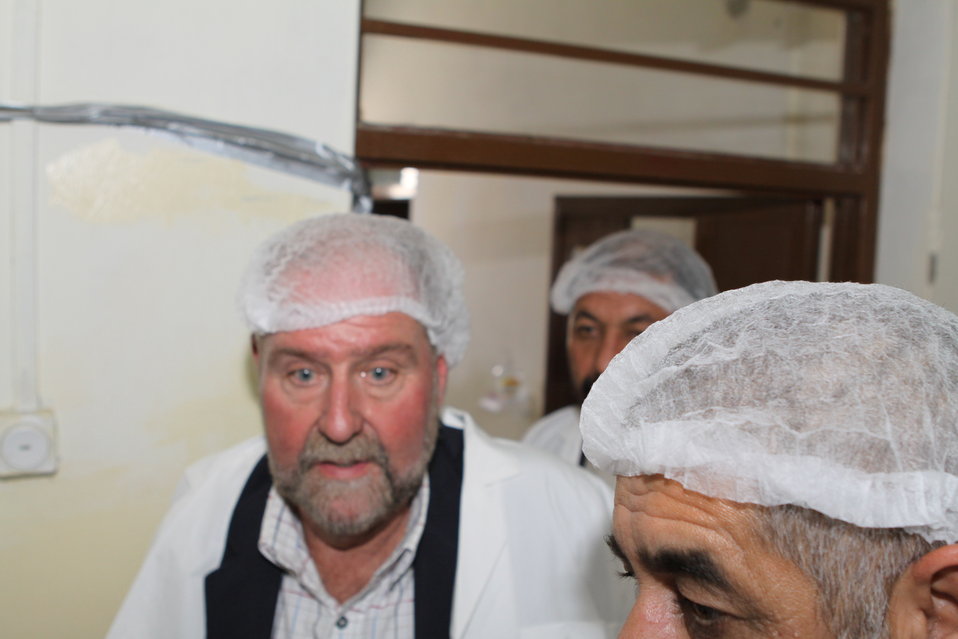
Bolan Poultry Farm